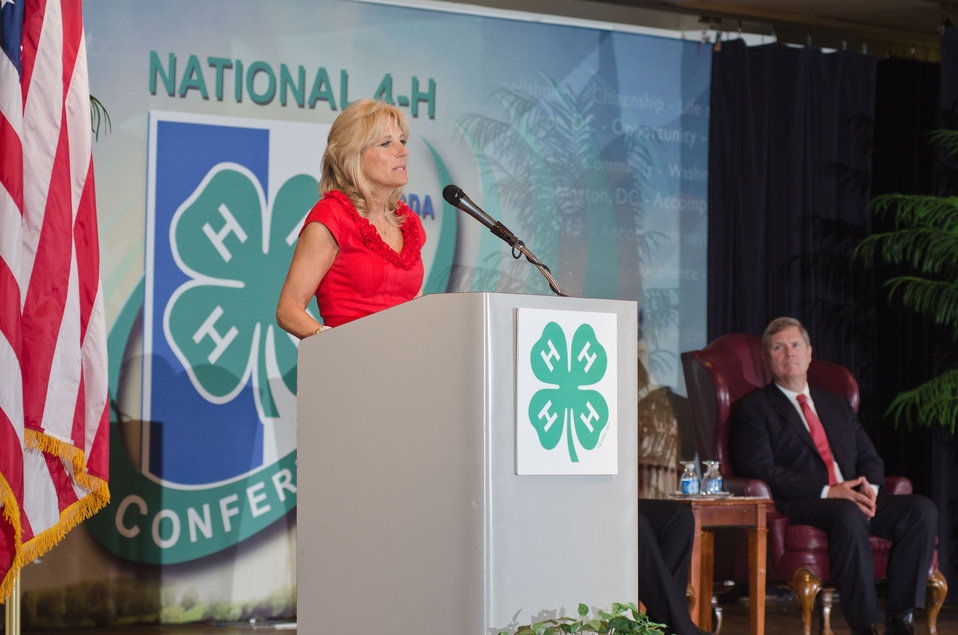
Dr. Jill Biden speaks about “Joining Forces,” the initiative started with First Lady Michelle Obama to encourage all Americans to support military families at the National 4-H Conference, in Chevy Chase. MD, on Monday, March 26, 2012. Joining Forces is a comprehensive national initiative to mobilize all sectors of society to give our service members and their families the opportunities and support they have earned.